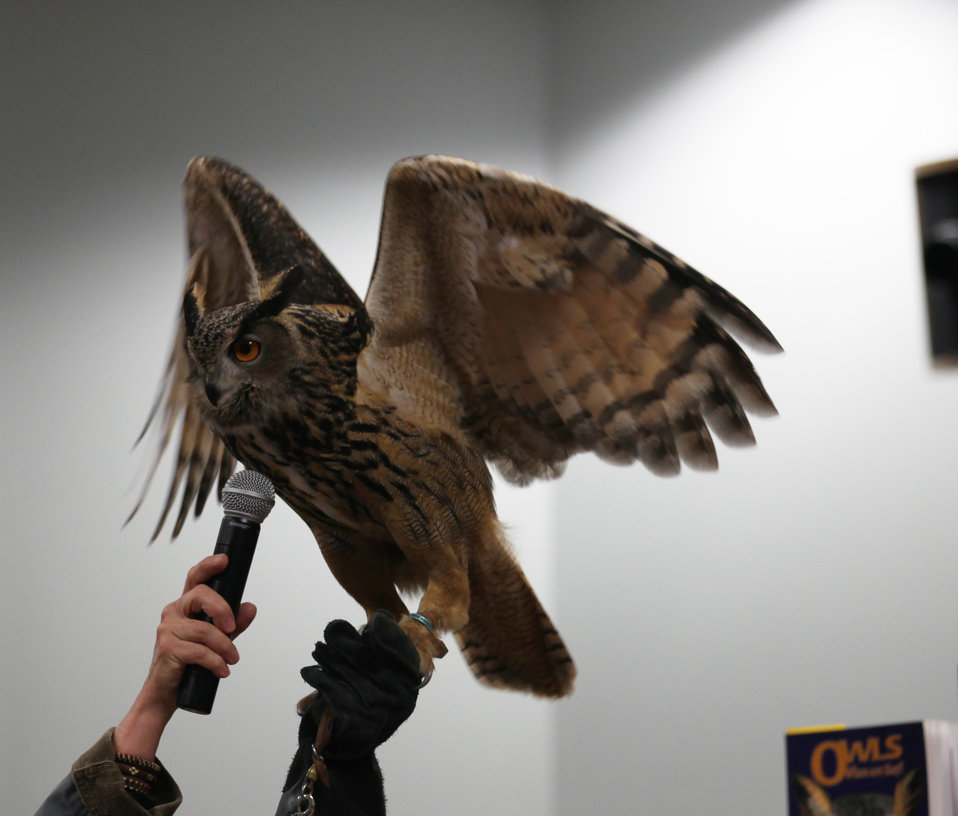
Great Horned Owl hoots for the audience.